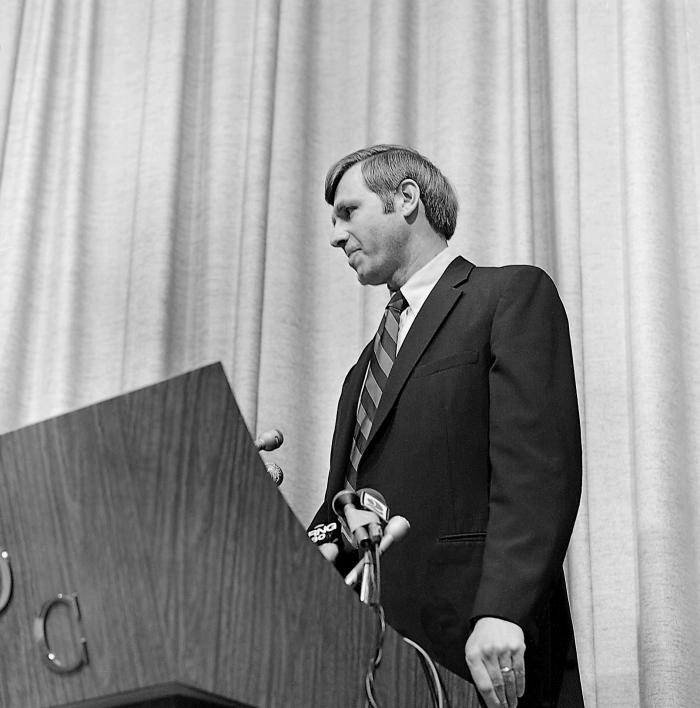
This April 5, 1977 photograph depicts former CDC Director William H. Foege, M.D., M.P.H., while speaking at a ceremony in which he was named Director-Designate of the Centers for Disease Control by DHEW Secretary Joseph A. Califano.